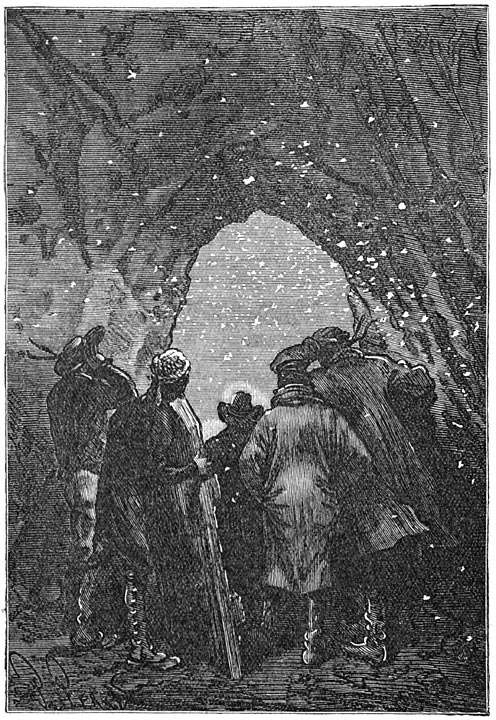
An illustration from Jules Verne's novel 'The Mysterious Island' (1873-74) drawn by Jules Férat. Polski: Ilustracja powieści Juliusza Verne'a 'Tajemnicza wyspa' (tytuł przekładany także jako: Wyspa tajemnicza, 1873-74) autorstwa Julesa Férata. Français : Jules Verne: 'L’Île mystérieuse' (1873-74), dessins par Jules Férat. Orginal description from the book: Français : Du haut de Granite-house.